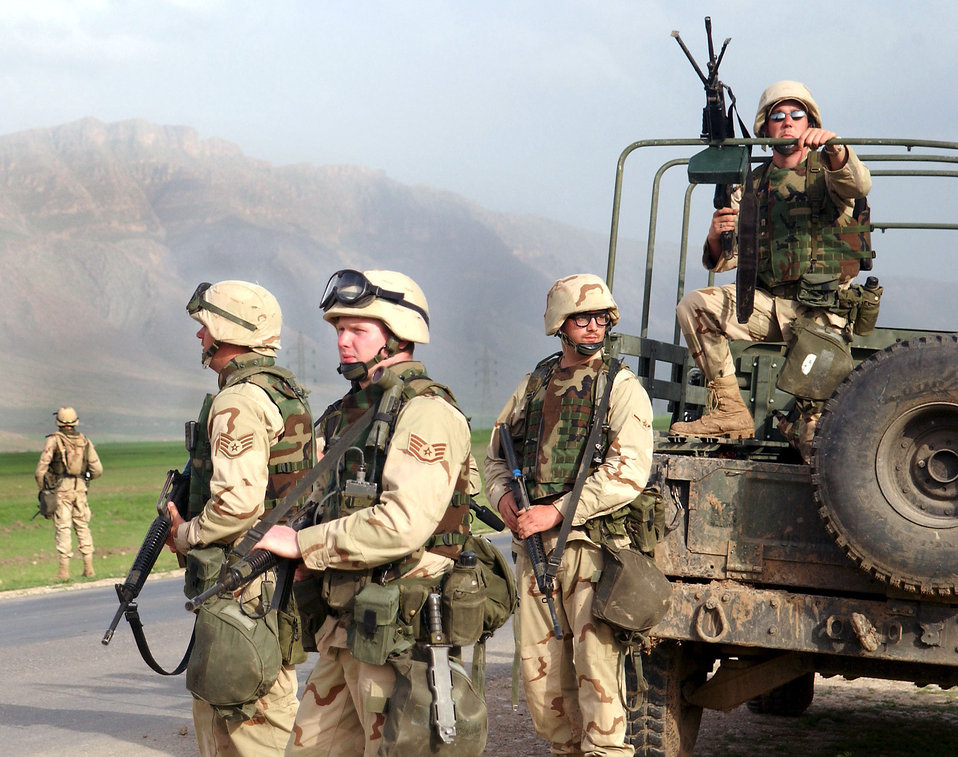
Show of force

OPERATION IRAQI FREEDOM -- Patrol members Staff Sgt. Jason Fields (left), Staff Sgt. Ryan Ziemer, Airman 1st Class Dennis Hock and Airman 1st Class Jason Gassler, all from the 100th Security Forces Squadron, Royal Air Force Mildenhall, England scan the nearby ridgeline. Patrols such as these gather map coordinates, local intelligence, and provide a show of force outside the air base.